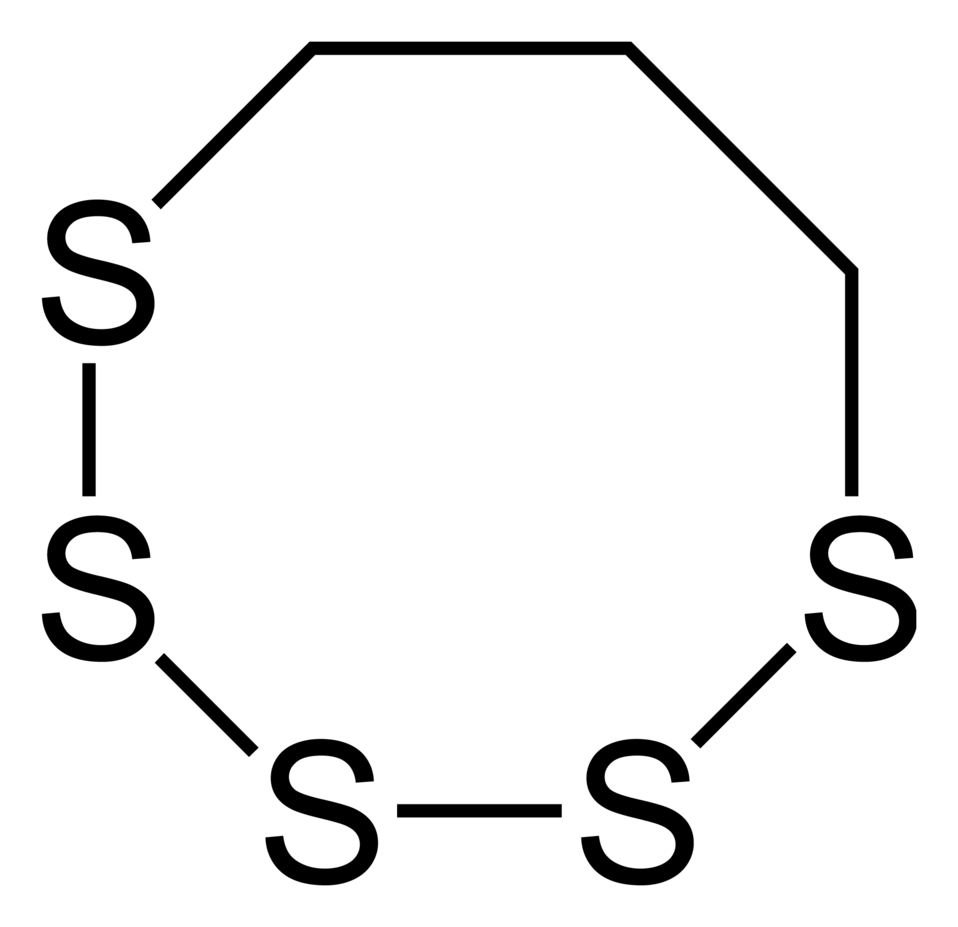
Skeletal formula of the 1,2,3,4,5-pentathiocane molecule, C3H6S5.